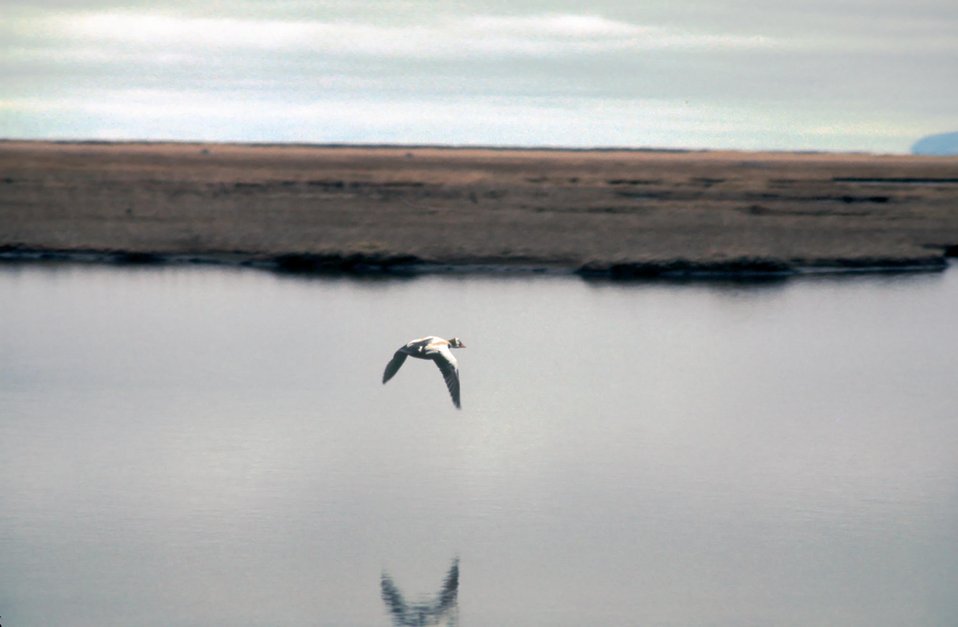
Eider

Spectacled eider drake in flight.